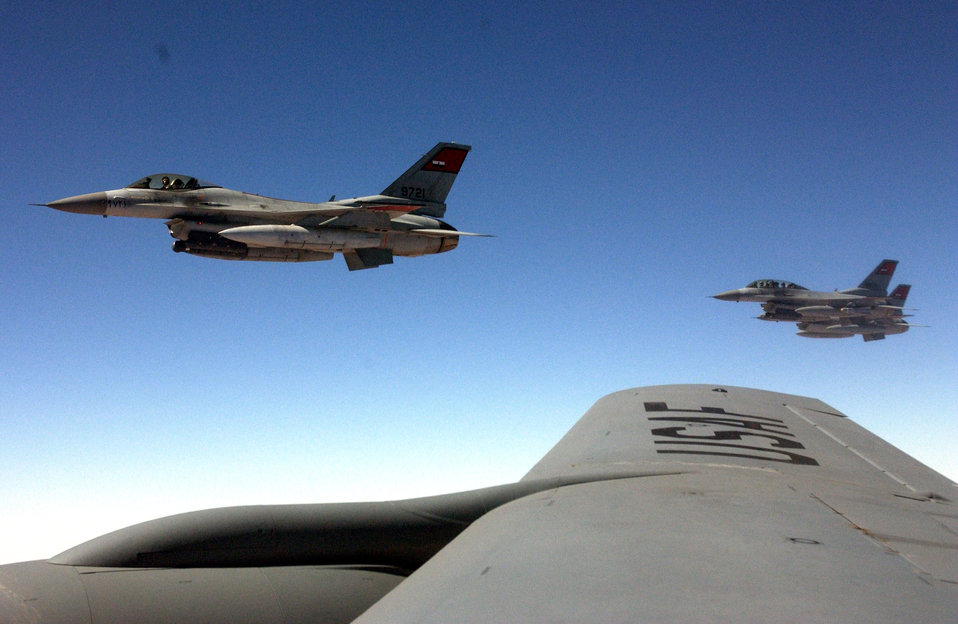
Reservists train with Egyptian airmen

Three Egyptian air force F-16s fly alongside a KC-135 Stratotanker from March Air Reserve Base, Calif., during in-flight refueling training. A contingent of reservists from the 336th Air Refueling Squadron at March ARB are providing aerial refueling training for Egyptian pilots.